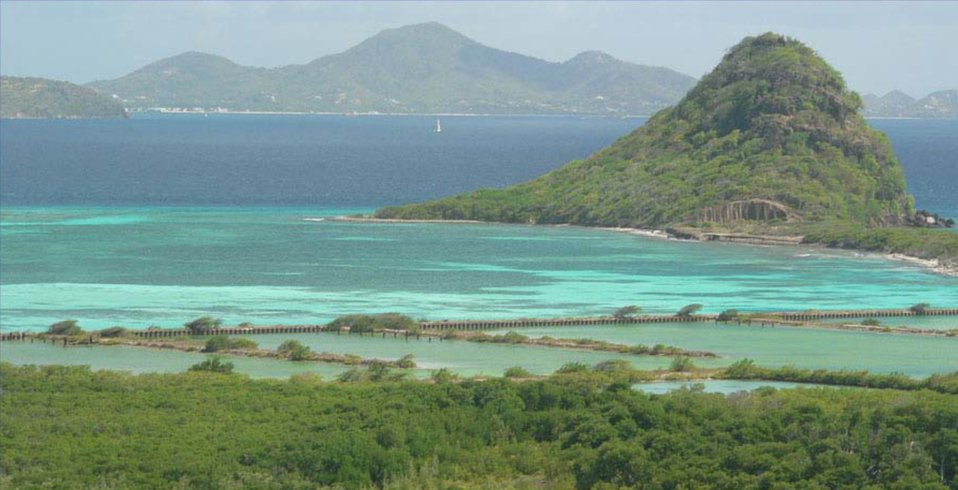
Workshop-Report-Ashton-Lagoon-Final

Ashton Lagoon, the location of USFWS-supported Caribbean bird conservation workshops by SCSCB.